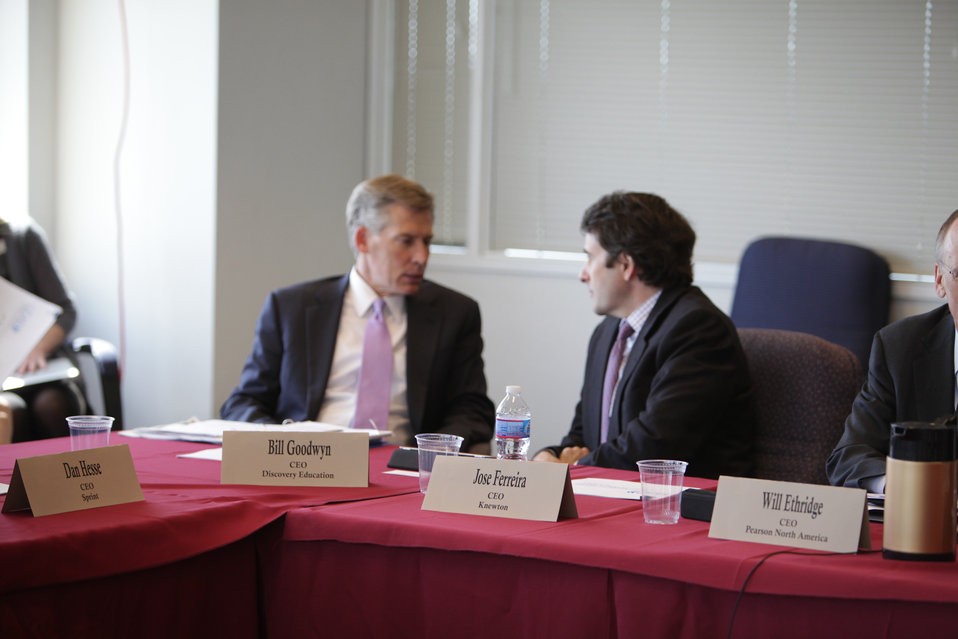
FCC Chairman Host Leaders From the Digital Education Ecosystem

CEO of Discovery Educations, Bill Goodwyn and CEO of Kneton, Jose Ferreira attends FCC Chairman's event at FCC's HQ in Washington, DC on March 29, 2012.